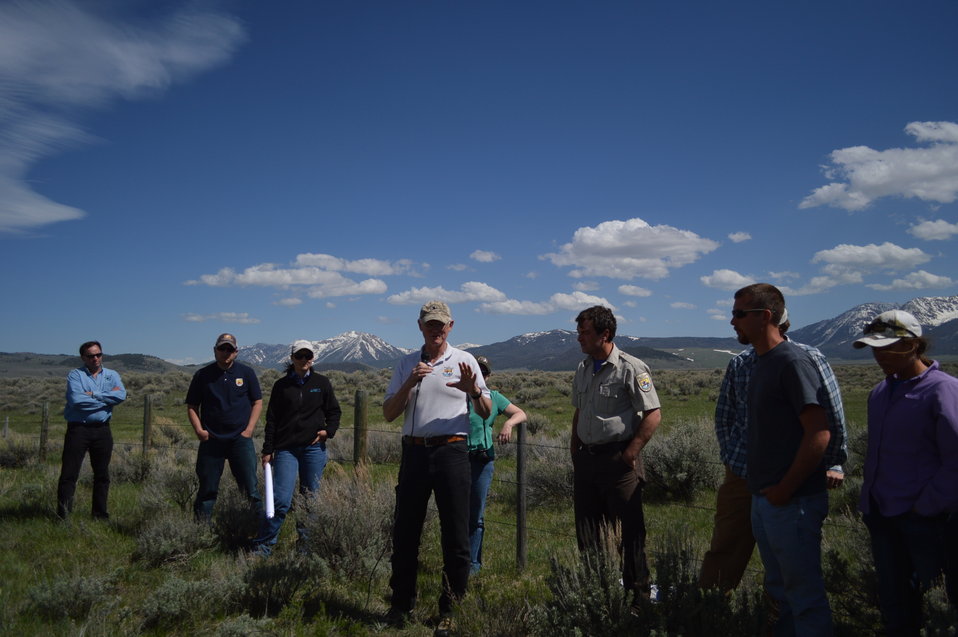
Regional Leadership Visit to Montana 2014